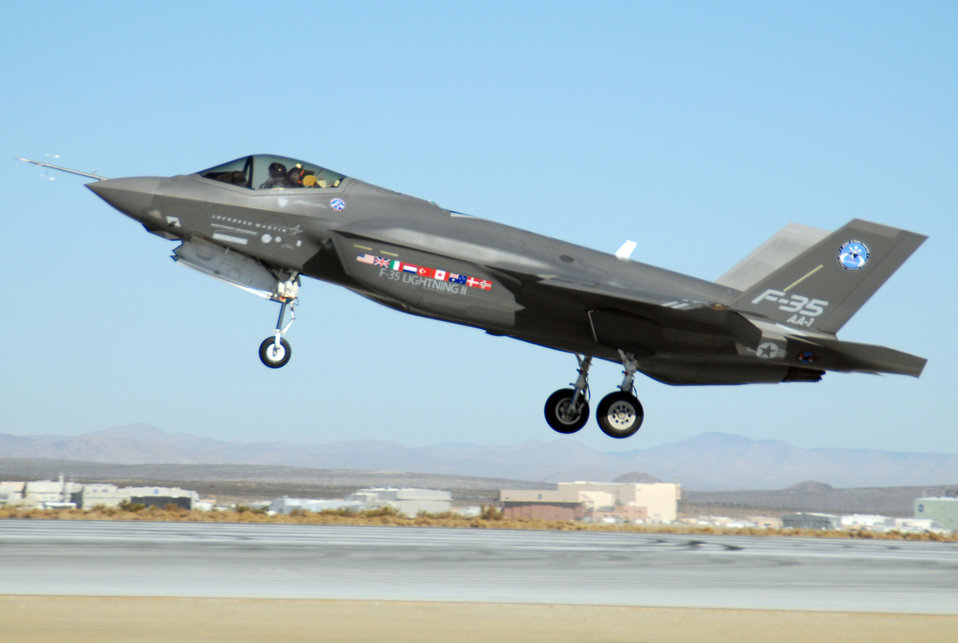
F-35 completes air-start test at Edwards

An F-35 Joint Strike Fighter, marked AA-1, lands Oct. 23 at Edwards Air Force Base, Calif. The F-35 Integrated Test Force staff concluded an air-start test.